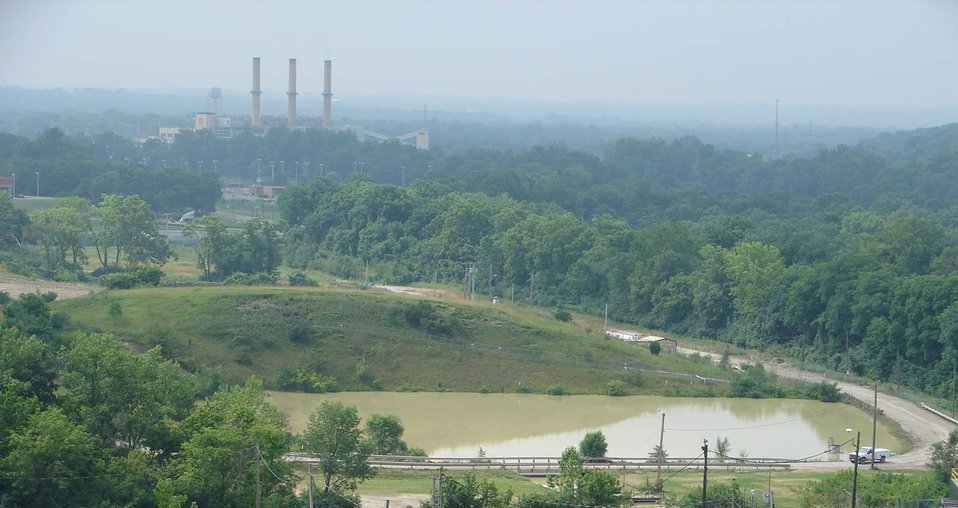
Operable Unit-1 (before)

The Mound Site’s Operable Unit-1, a former mixed-waste landfill, is shown before and after Recovery Act cleanup.